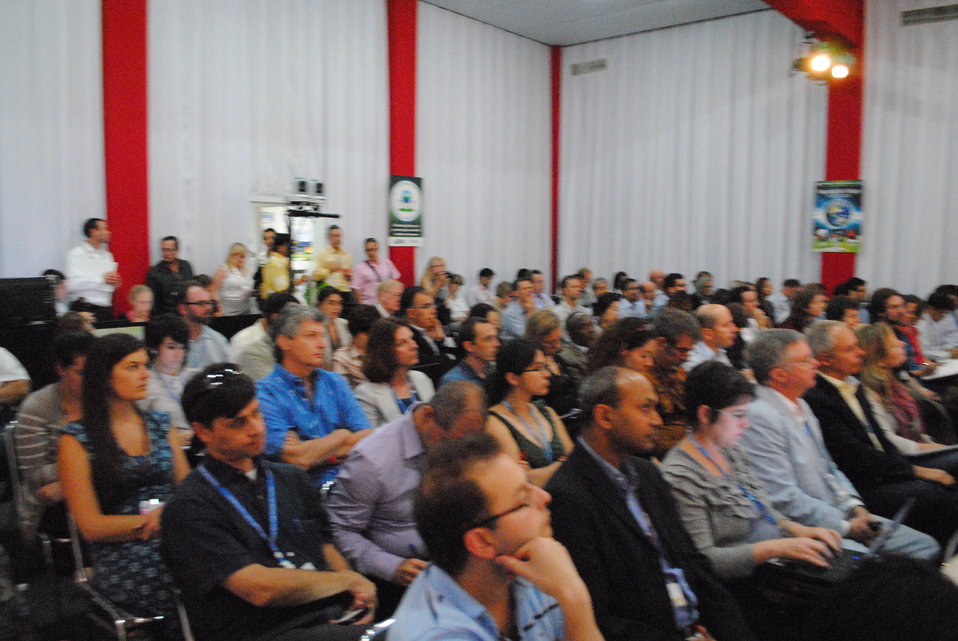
Audience Members Listen to Deputy Special Envoy Pershing

Members of the audience listen to U.S. Deputy Special Envoy for Climate Change Jonathan Pershing speak during the side event, Enhancing Capacity for Low Emission Development Strategies, at the U.S. Center at COP-16 in Cancun, Mexico, on December 2, 2010.